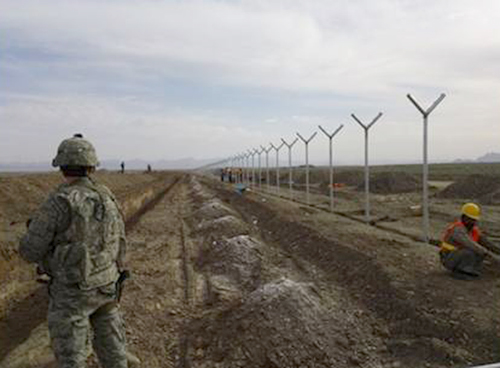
Shindand Air Base

Members of the 838th Air Expeditionary Advisory Group construct eight miles of perimeter fence as part of an expansion of Shindand Air Base, Afghanistan. The new expansion is slated to become the new living and work area for more than 3,000 coalition forces and government contractors. The relocation of these members will make room for a new a 1.3-mile NATO training runway, with construction scheduled to begin in early 2012.